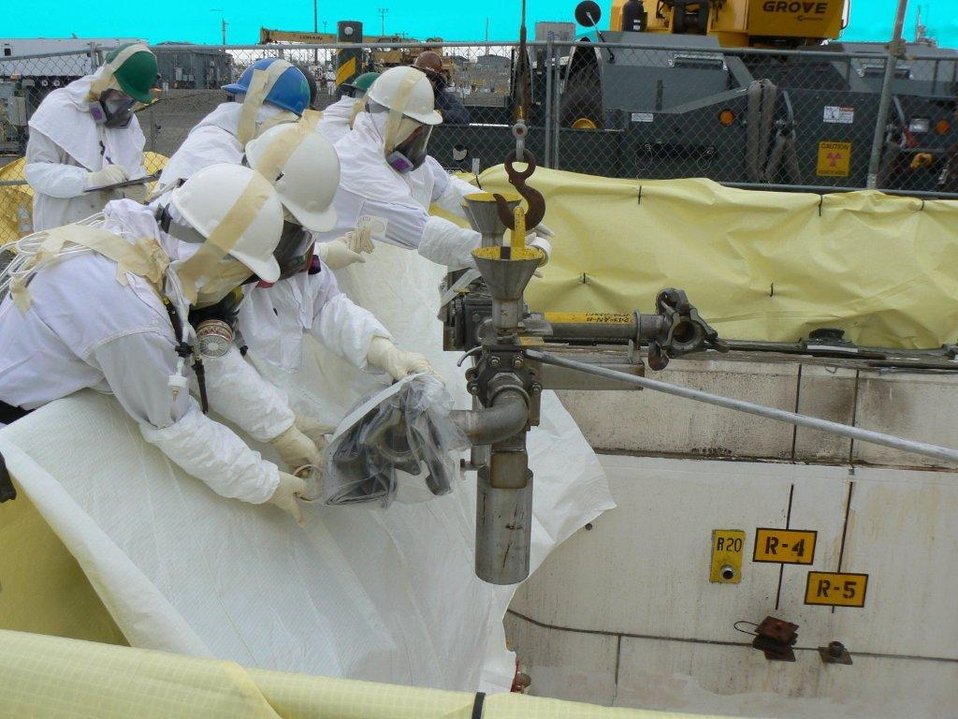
ORP Equipment Replacement

Hanford tank farm workers replaced deteriorating equipment in several of Hanford's valve pits with new parts. The Recovery Act-funded upgrades will help ensure a leak-free transfer of waste between tanks and improve safety and operations in the farms.